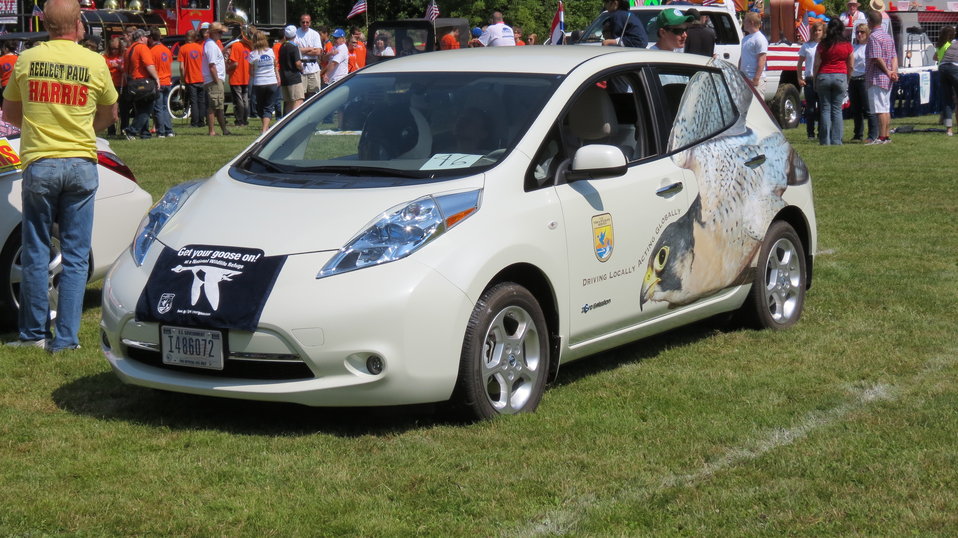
GYGO! in an Eco-friendly USFWS Nissan Leaf

Staff from Washington's Ridgefield National Wildlife Refuge entered their fuel-efficient Nissan Leaf in the Ridgefield Fourth of July Parade, 2012. The car, which proudly dons the Get Your Goose On! towel, features Finnegan Falcon with the motto 'Driving Locally, Acting Globally.'

Continuing its efforts to 'walk the talk' and decrease CO2 output, the USFWS Pacific Region recently acquired a Nissan Leaf. As the first all-electric car in our fleet, the Nissan Leaf produces no tailpipe pollution or greenhouse gas emissions and reduces dependence on petroleum. In addition, the Regional Office purchases 100% of its electricity as renewable energy, helping to further reduce emissions associated with our business operations.